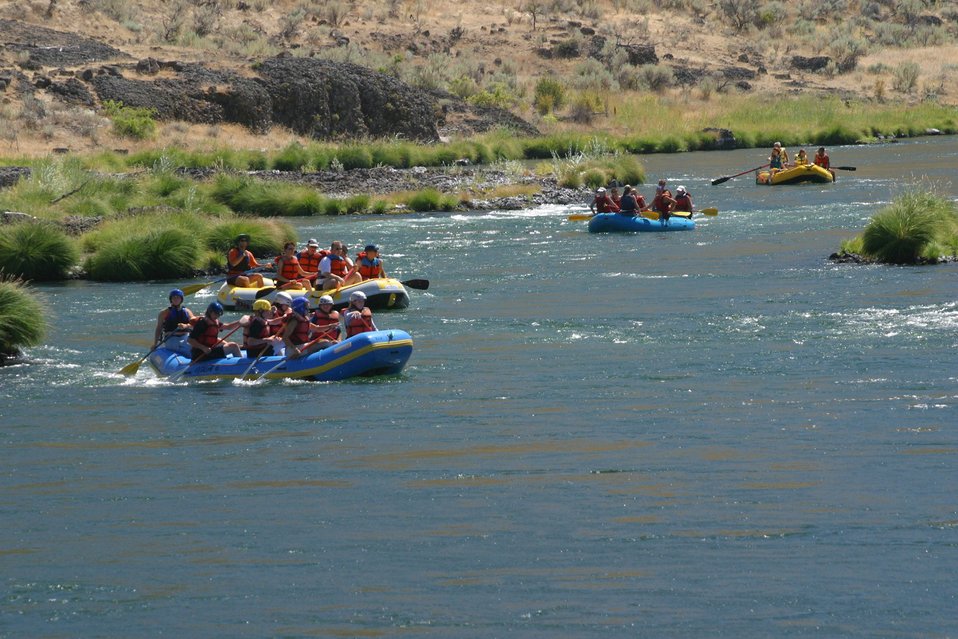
Looking up stream from the Sandy Beach take out.